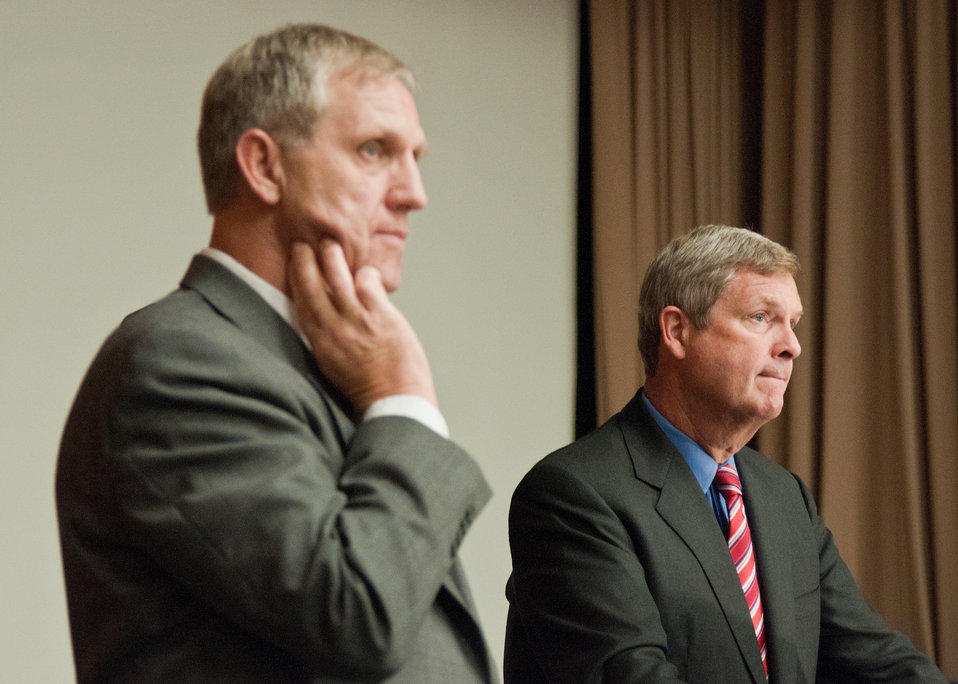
President, National Farmer’s Union (left) Roger Johnson and Agriculture Secretary Tom Vilsack (right) listen to questions posed by members of the National Farmer’s Union during their annual Fall Legislative Fly-In at the U.S. Department of Agriculture in Washington, D. C. on Monday, Sept. 12, 2011. Johnson is a third-generation family farmer from Turtle Lake, ND.